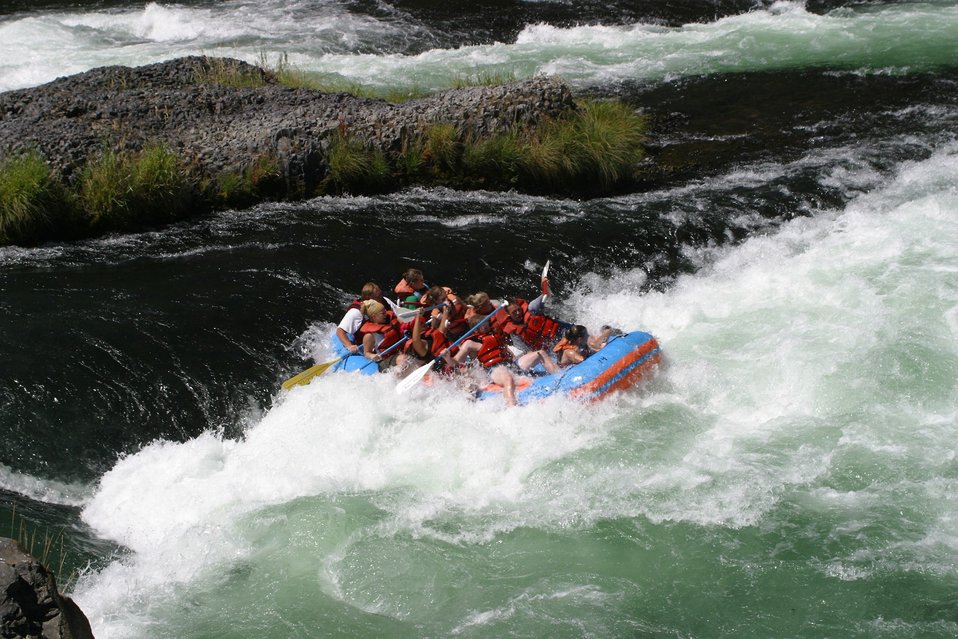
Oak Springs is a Class IV Rapids. The left channel has shallow rocks, large standing waves, turbulent currents and a large hole during high flows. The right channel has a large hole, shallow rocks, and turbulent currents. 7/26/03 Pelton Dam 3600 cfs: Moody Rapids 4300 cfs.